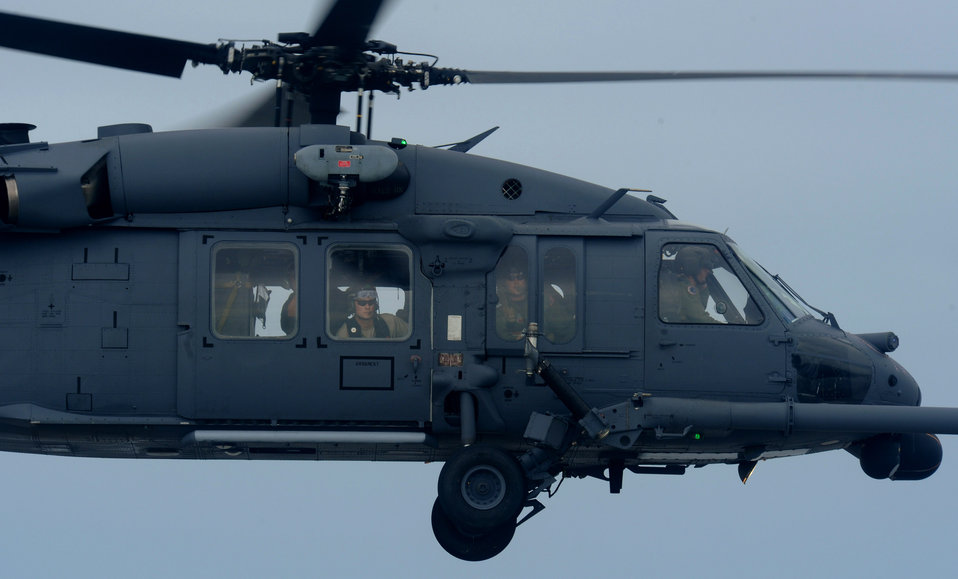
A watchful eye

An HH-60 Pave Hawk crew conducts search and rescue operations over Galveston, Texas, Sept. 13 after Hurricane Ike. The crew is assigned to the 331st Air Expeditionary Group at Randolph Air Force Base, Texas.